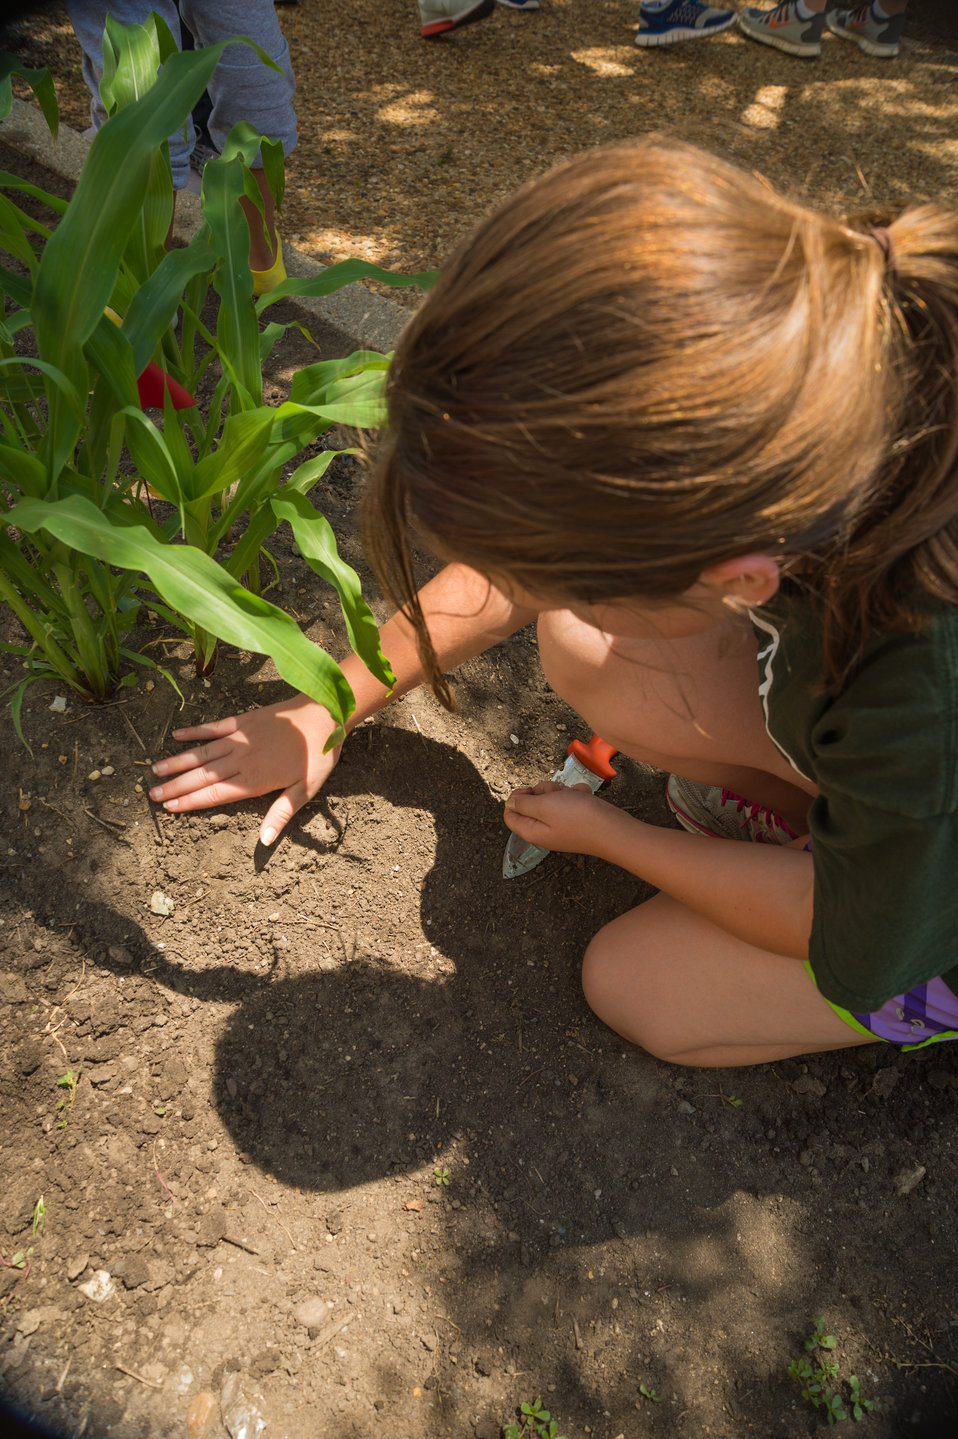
Vera Walsh-Alker, a seventh grade student from Alice Deal Middle School plants beans in the Three Sisters Garden at the United States Department of Agriculture (USDA) People’s Garden, on Wed. Jun. 4, 2014 in Washington, DC. The garden is named the Three Sisters Garden for the three crops grown in the garden, corn, beans and squash. Corn the first sister is the tallest representing strength, beans the second sister climb and need the support of the first sister and provide nitrogen for the crops and squash the third sister protect others from sun and animals. The USDA’s Faith Based and Neighborhood Partnerships office sponsored the event.